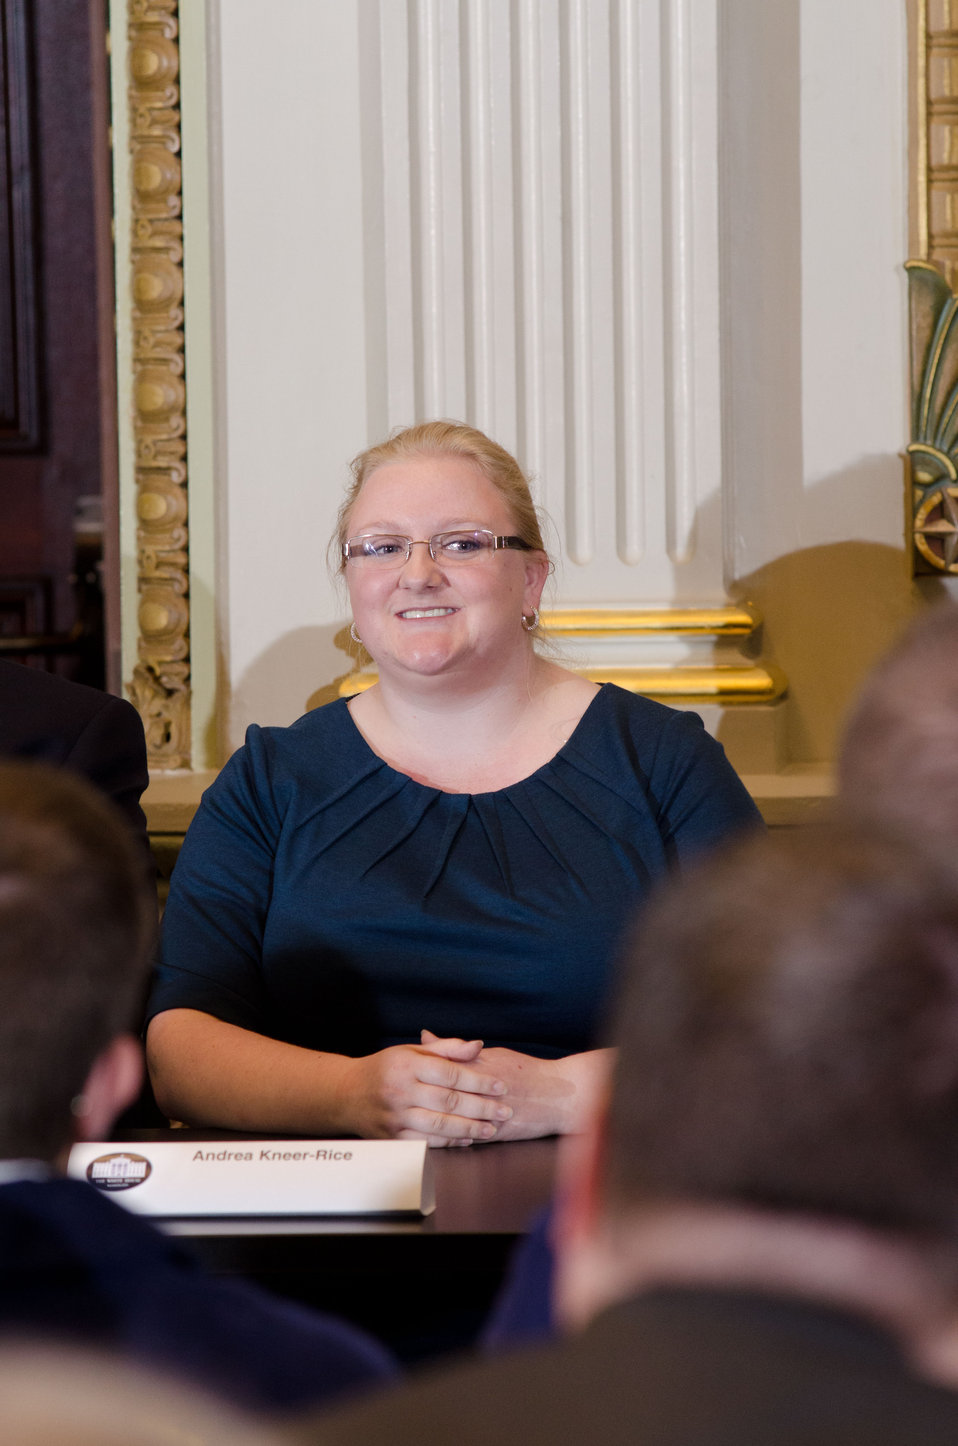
University of Maryland Extension 4-H Educator Andrea Kneer-Rice speaks at the Champions of Change Recognition event in Indian Treaty Room at the Executive Office Building in Washington, D.C. on Tuesday, Oct. 9, 2012. The Champions of Change program was created to honor ordinary Americans doing great work in their communities. Each week, a different sector is highlighted and groups of Champions, ranging from educators to entrepreneurs to community leaders, are recognized for the work they are doing to serve and strengthen their communities.